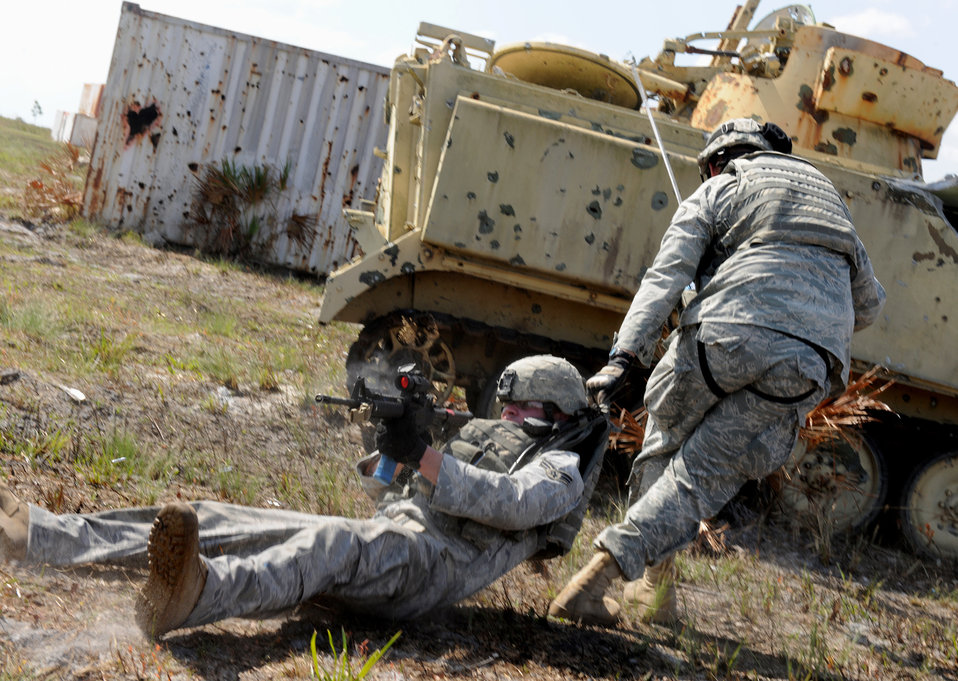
I'm covering you

An Airman assigned to the 823rd Base Defense Squadron drags a member of his fire team to safety Feb. 16, 2011, during joint exercise Atlantic Strike 11-01 at Avon Park Air Force Range, Fla.